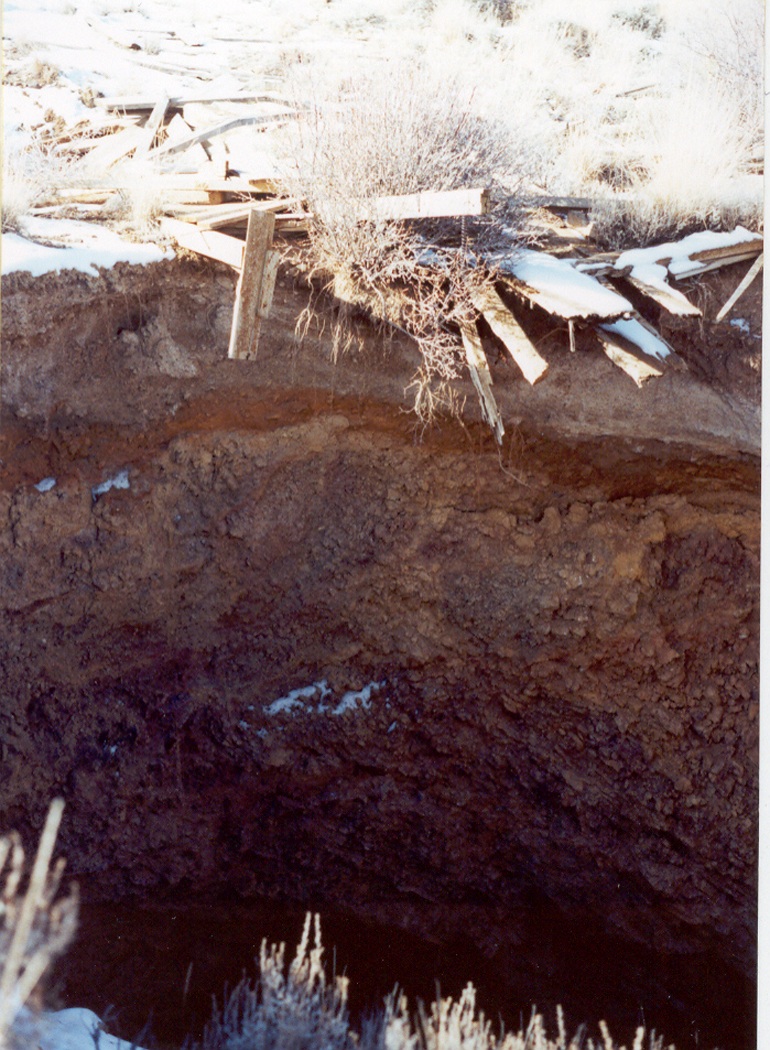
Abandoned Mine adit Salmon Field Office Upper Columbia Salmon Clearwater District UCSC